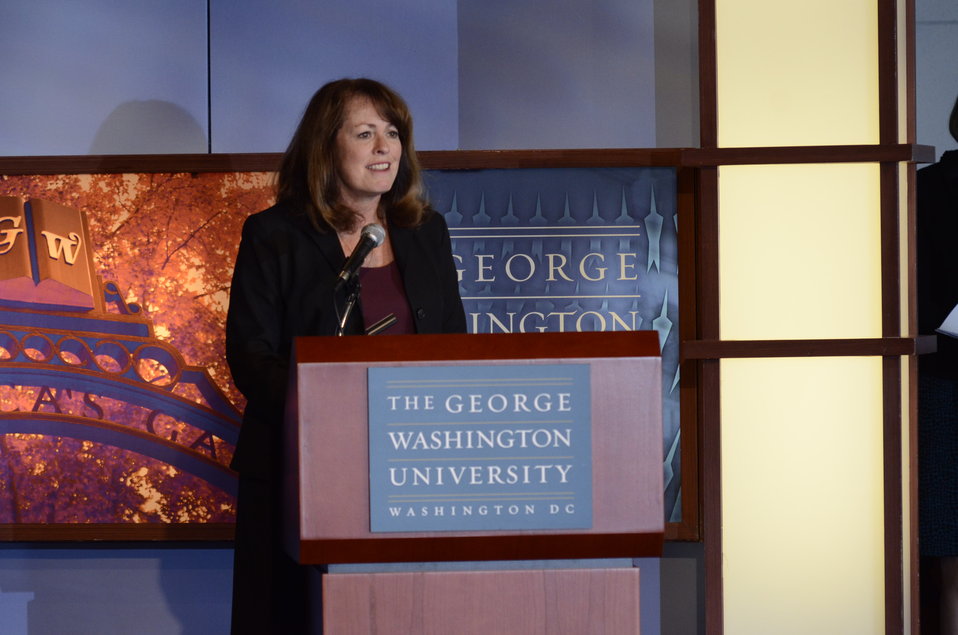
Trachtenberg School of Public Policy and Public Administration Director Dr. Kathryn Newcomer provided welcome remarks for the “Shaping the Farm Bill for a Sustainable Future” Forum at the Jack Morton Auditorium for the Trachtenberg School of Public Policy and Public Administration, George Washington University in Washington, D.C., on Thursday, March 1, 2012.